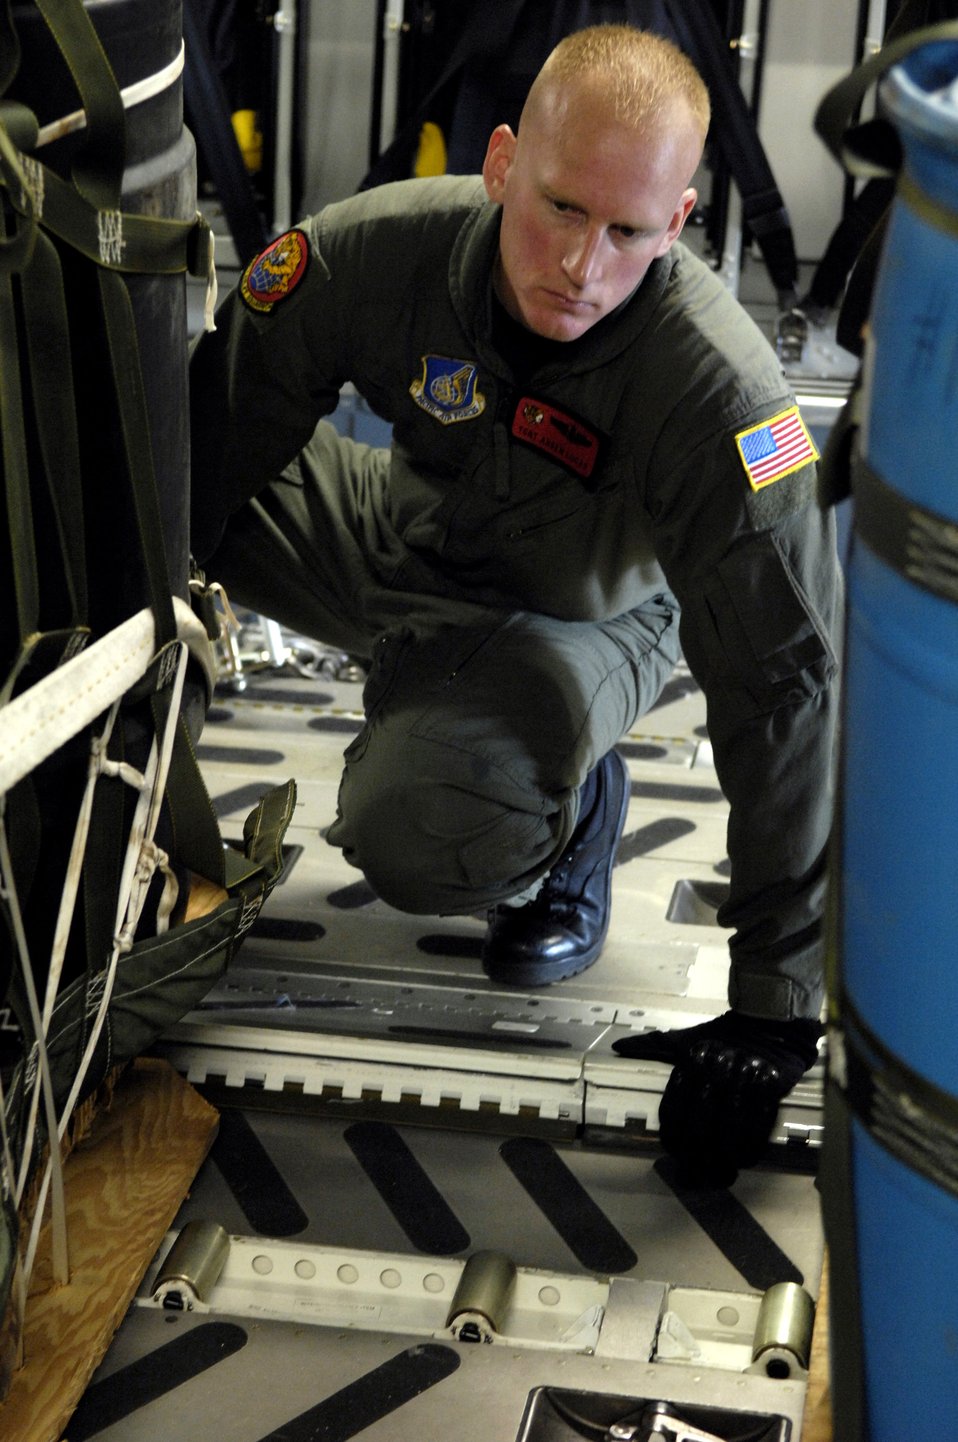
Airlift training

Tech. Sgt. Ansen Lucas rigs practice airdrop bundles on a C-17 Globemaster III in preparation for an airdrop training mission July 16 at Hickam Air Force Base, Hawaii. Sergeant Lucas is a loadmaster with the 535th Airlift Squadron.